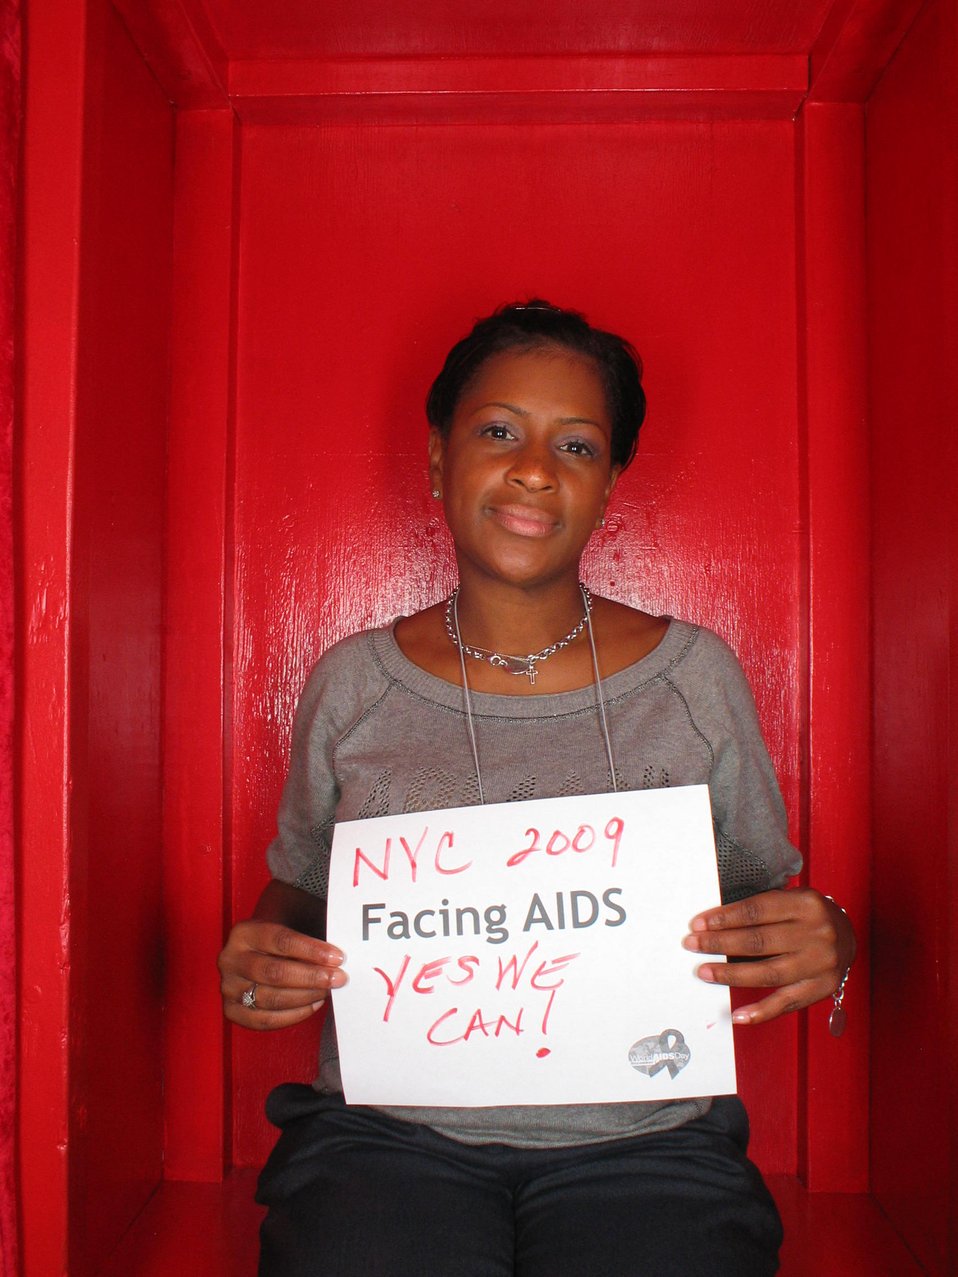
NYC 2009 Facing AIDS Yes We Can!